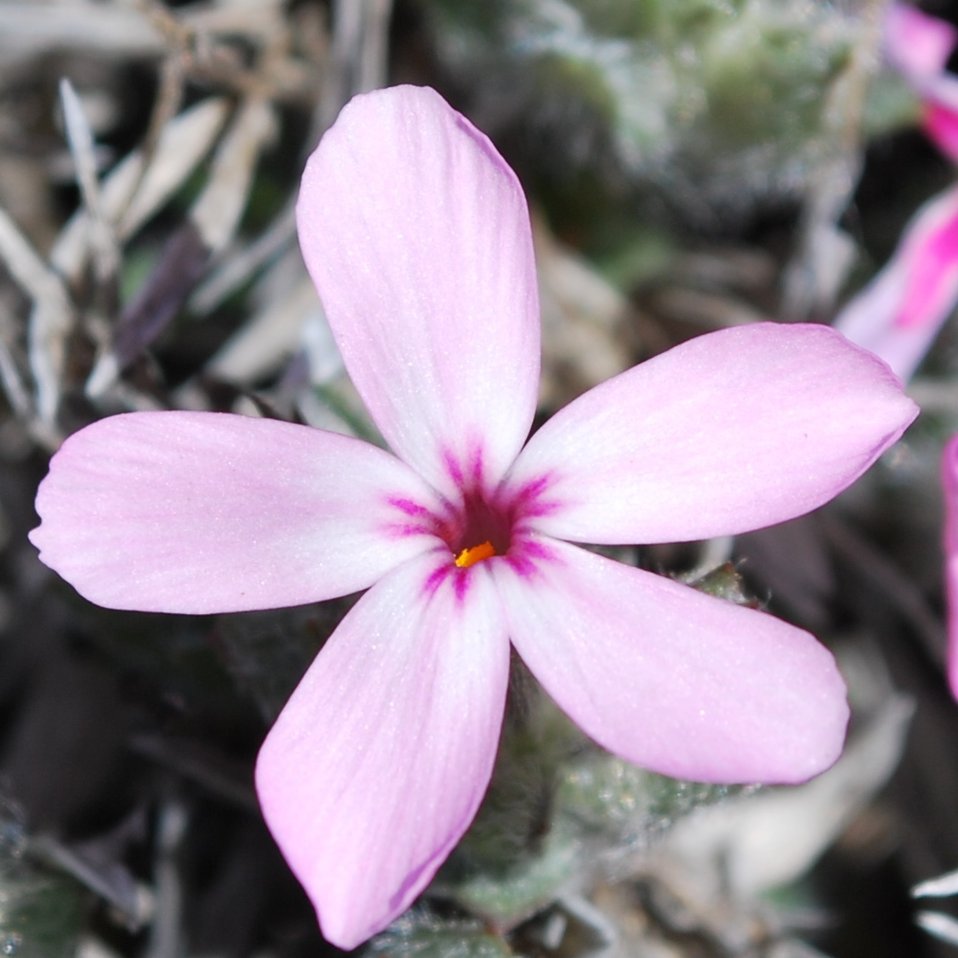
The Yreka Phlox

An endangered species, the Yreka phlox is known to exist in only four locations in the world, all near Yreka, Calif.